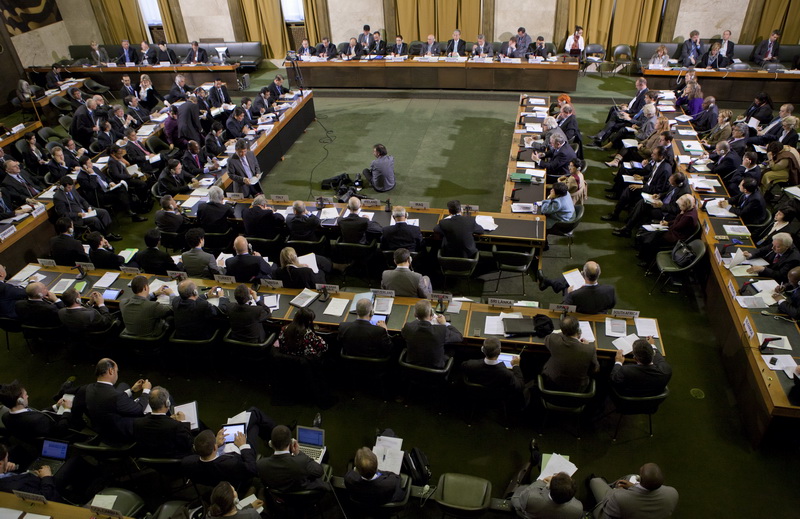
Assistant Secretary Gottemoeller Delivers the Opening Statement

Rose E. Gottemoeller, Assistant Secretary of State for Arms Control, Verification and Compliance, delivers the opening statement for the United States at the First Plenary of the 2012 Session of the Conference on Disarmament in Geneva, Switzerland, on January 24, 2012.